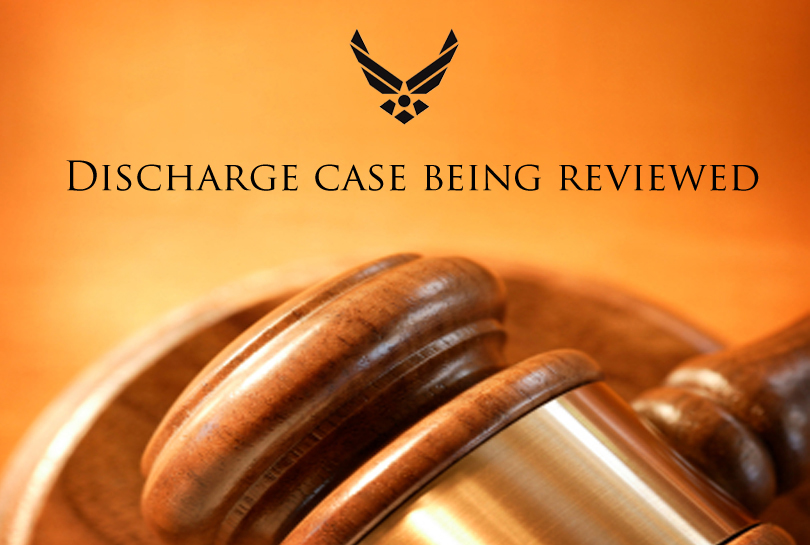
Air Force officials clarify status of Air Force officer discharge case